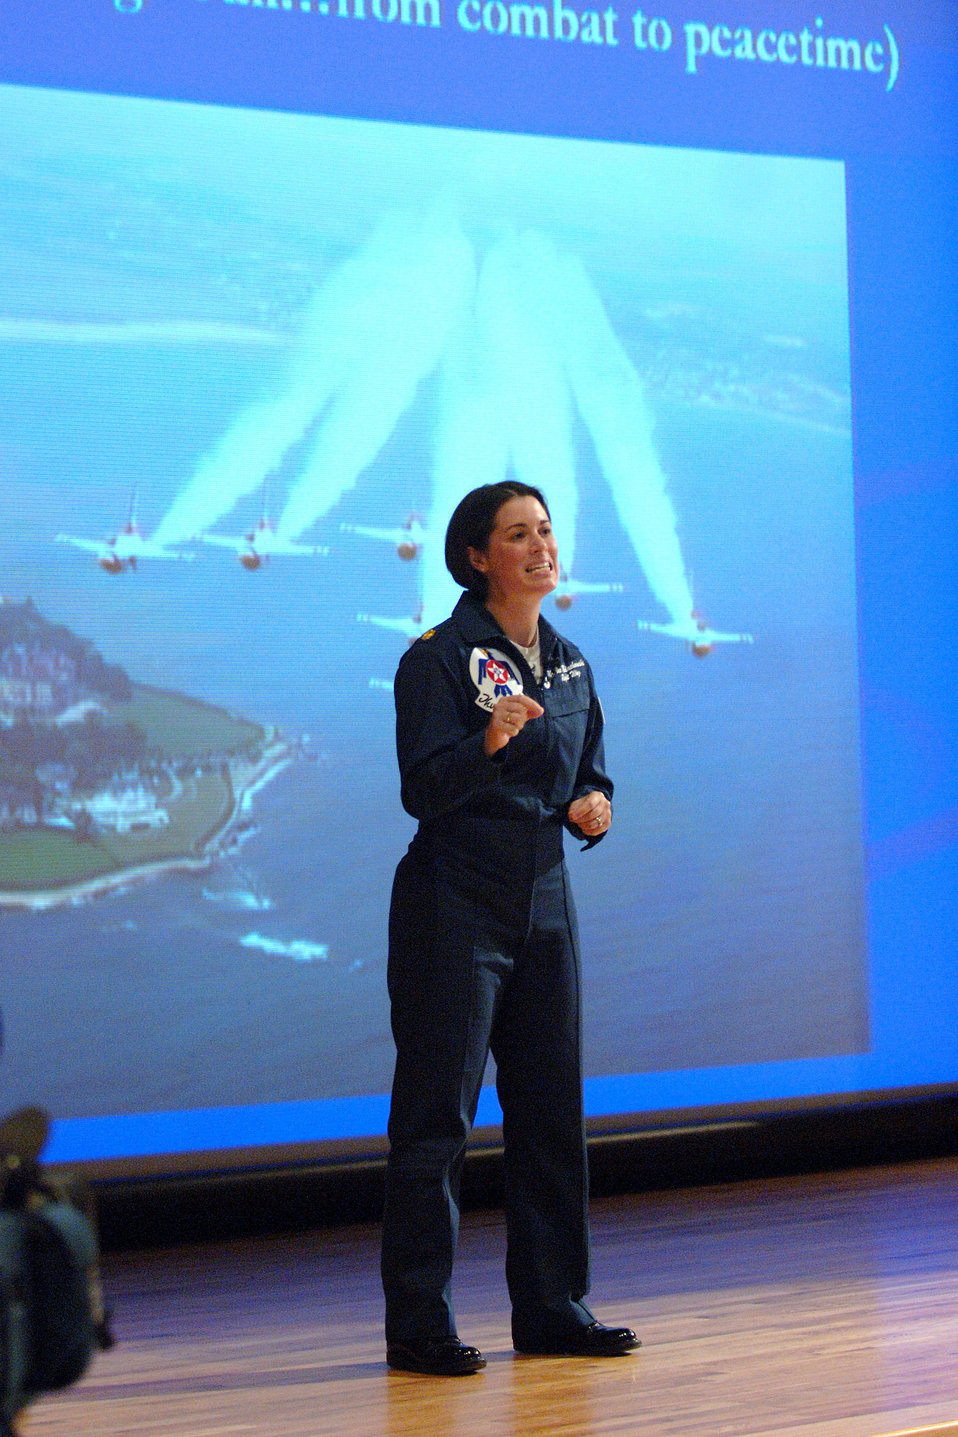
Thunderbird pilot talks to cadets on importance of teamwork

Major Nicole Malachowski an Air Force Thunderbirds Aerial Demonstration Team pilot gives a speech at the Air Force Academy's 14th Annual National Character and Leadership Symposium March 1 in Colorado Springs, Colo. Major Malachowski, a 1996 academy graduate, spoke to academy cadets and local area highschool students about teamwork and diversity in the Air Force.